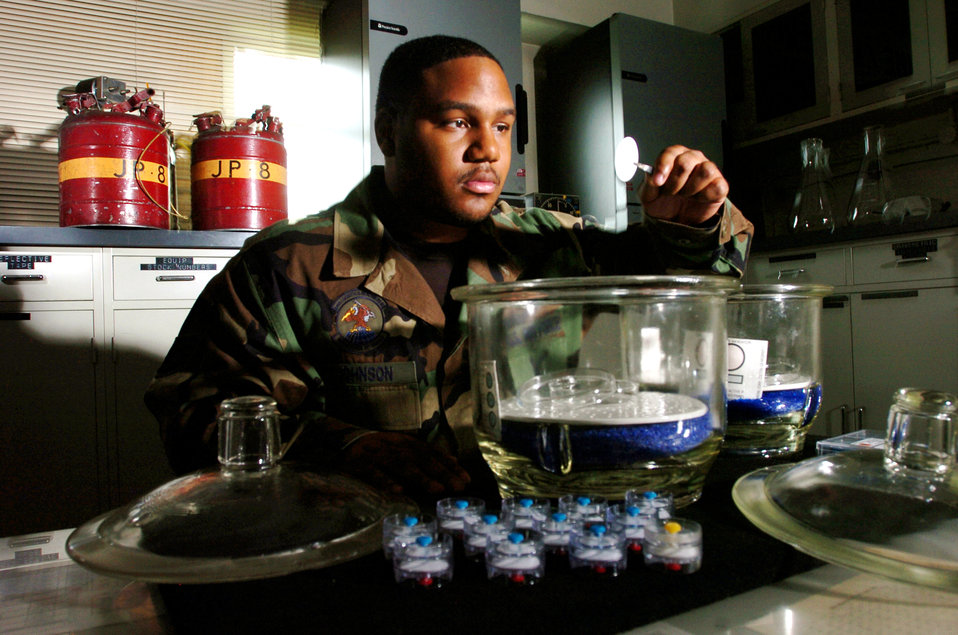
Technicians ensure safe, clean, serviceable fuel

YOKOTA AIR BASE, Japan -- Staff Sgt. Carmarius Johnson dries residual fuel from a filter. He is inspecting the filters to ensure they are free of contaminants. He is a fuels laboratory technician with the 374th Logistics Readiness Squadron here.